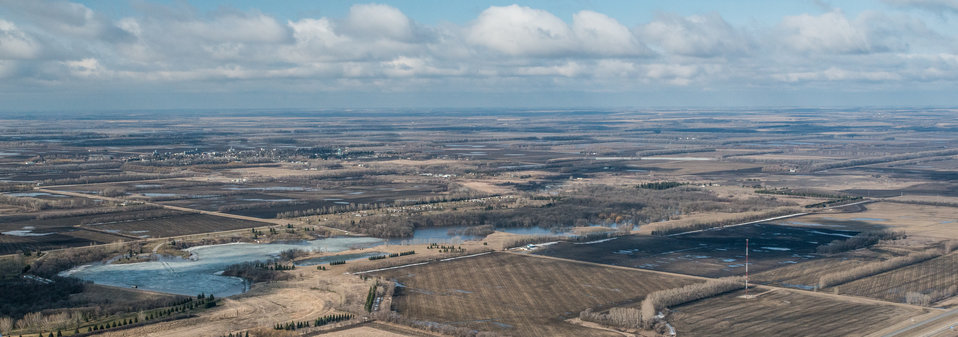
Larimore Dam, a Public Law PL83-566 Small Watershed Program, in Grand Forks County, ND, on Wednesday, May 1, 2013. Recreational areas are seen around the dam. To learn about the Red River Basin Initiative, see www.mn.nrcs.usda.gov/news/features13/RRBI.html.